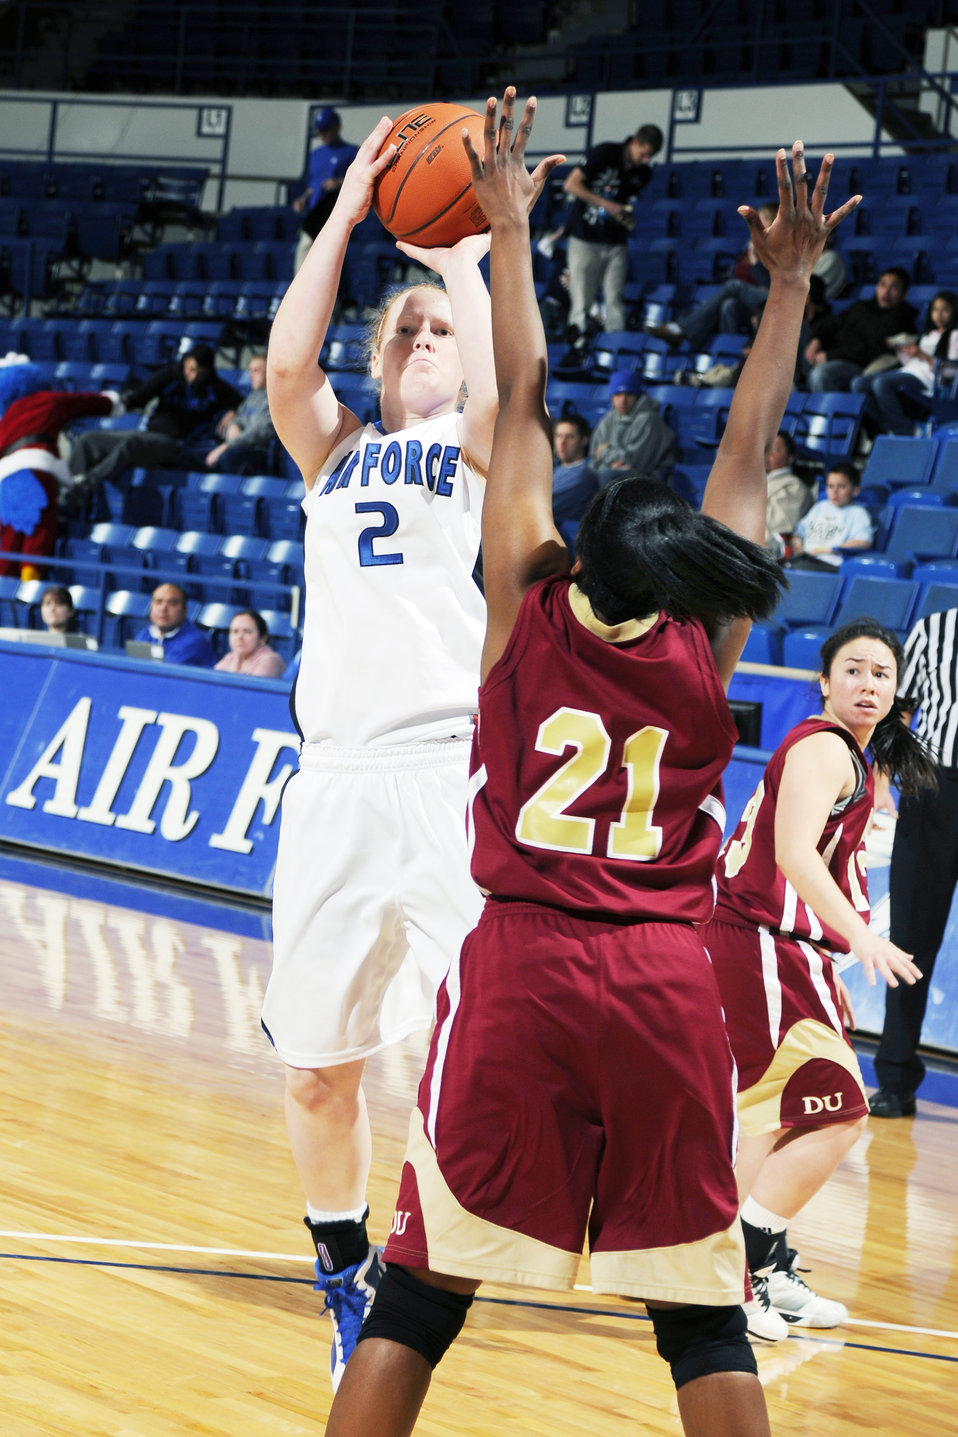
Air Force Academy

U.S. Air Force Academy, CO -- Freshman guard Alicia Leipprandt goes up for the jumper as the Falcons lost to the Denver Pioneers 64-62 at Clune Arena Dec 9. Air Force returns to action Saturday, Dec 19, hosting Bradley.